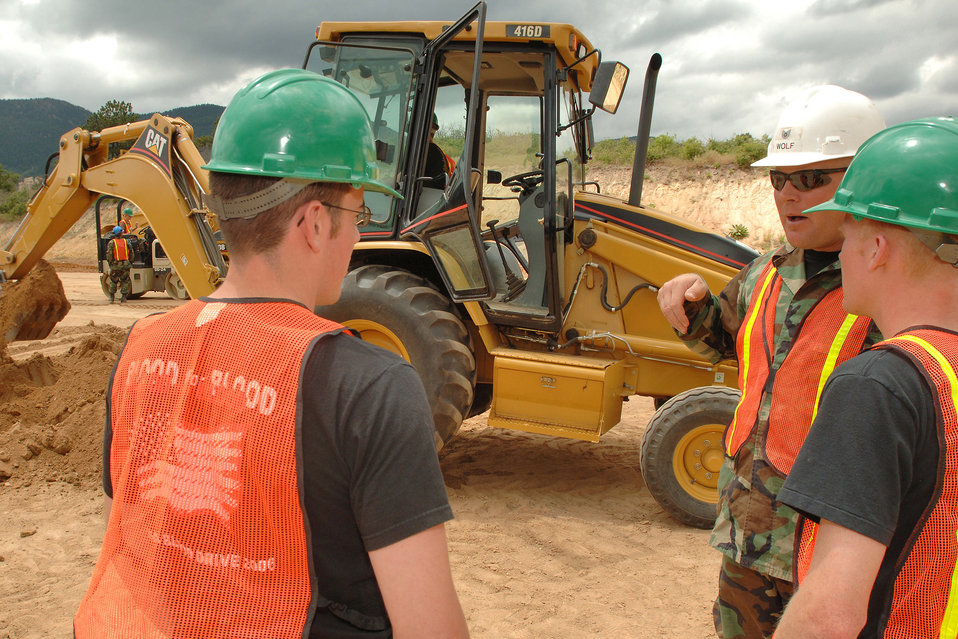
Summer lab gives cadets engineering experience

Tech Sgt. Steven D. Wolfe mentors Air Force Academy Cadets 2nd Class Sean Fitzgerald and Sean Houseworth on the proper use of a back hoe during the Field Engineering and Readiness Laboratory course at the Academy. The course exposes cadets to several aspects of civil engineering, including heavy equipment operation, steel bridge construction, designing and pouring concrete beams and paving portions of a road. Sergeant Wolfe is from the 434th Civil Engineer Squadron, Grissom Air Reserve Base, Ind.